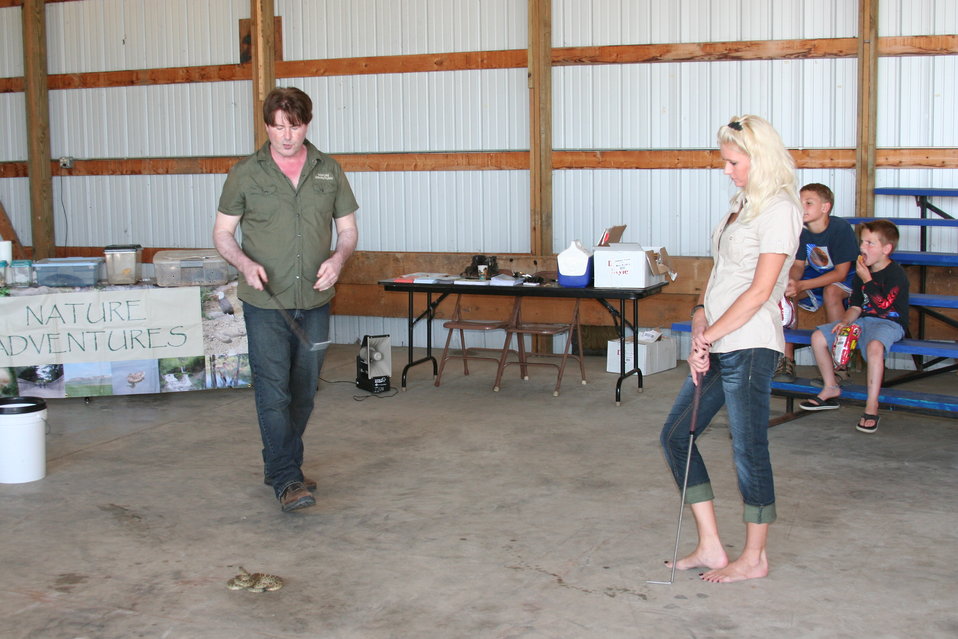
2011 Huron Prairie Fest